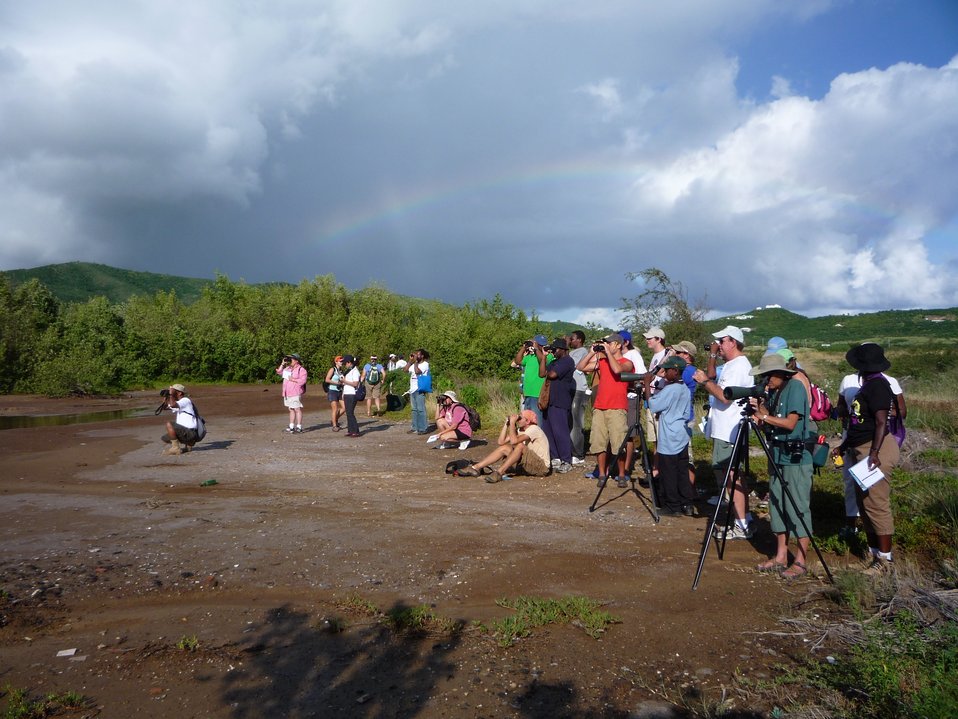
Birding

SCSCB trainees go birding.